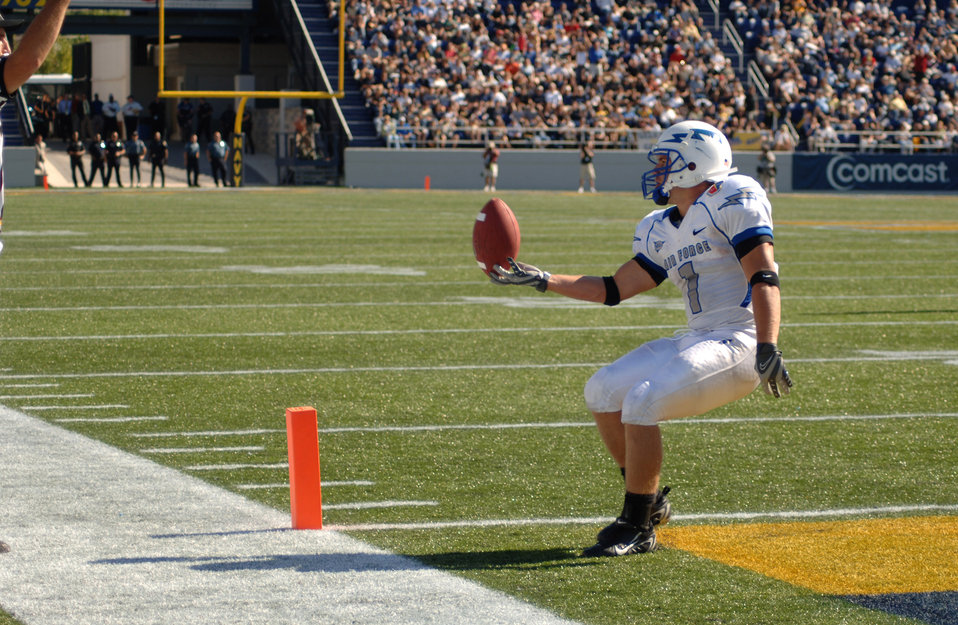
Football: Falcons fall to Navy, 31-20

U.S. Air Force Academy Falcon receiver Chad Hall flips the ball to an official after scoring on an end around play in the third quarter of Air Force's 31-20 loss to Navy Sept. 29 at Annapolis, Md. The senior carried six times for 29 yards.